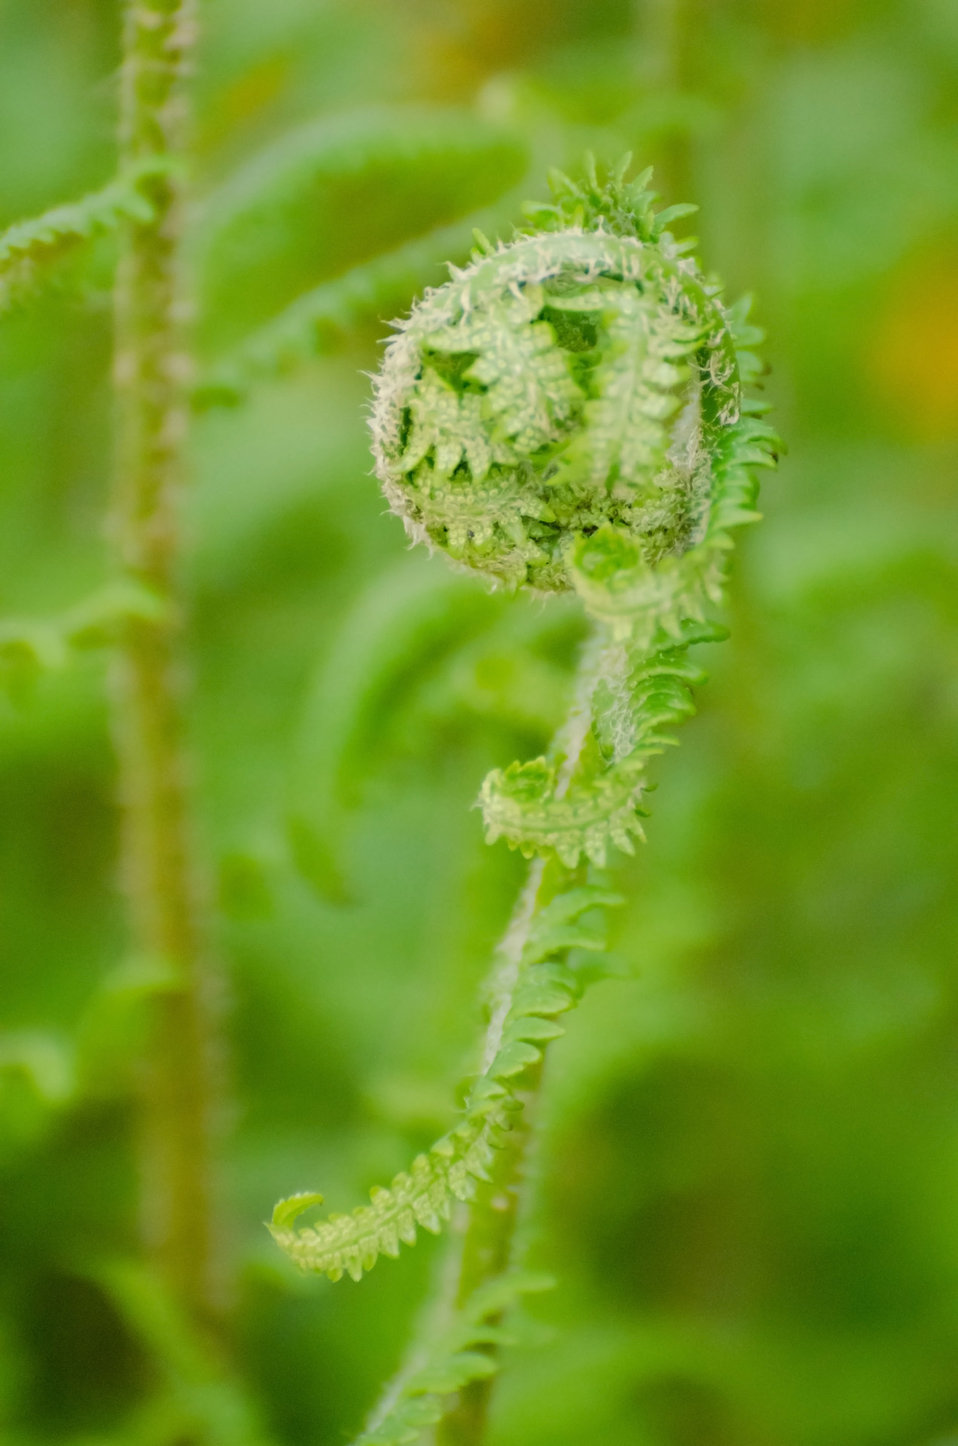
Bracken - macro.